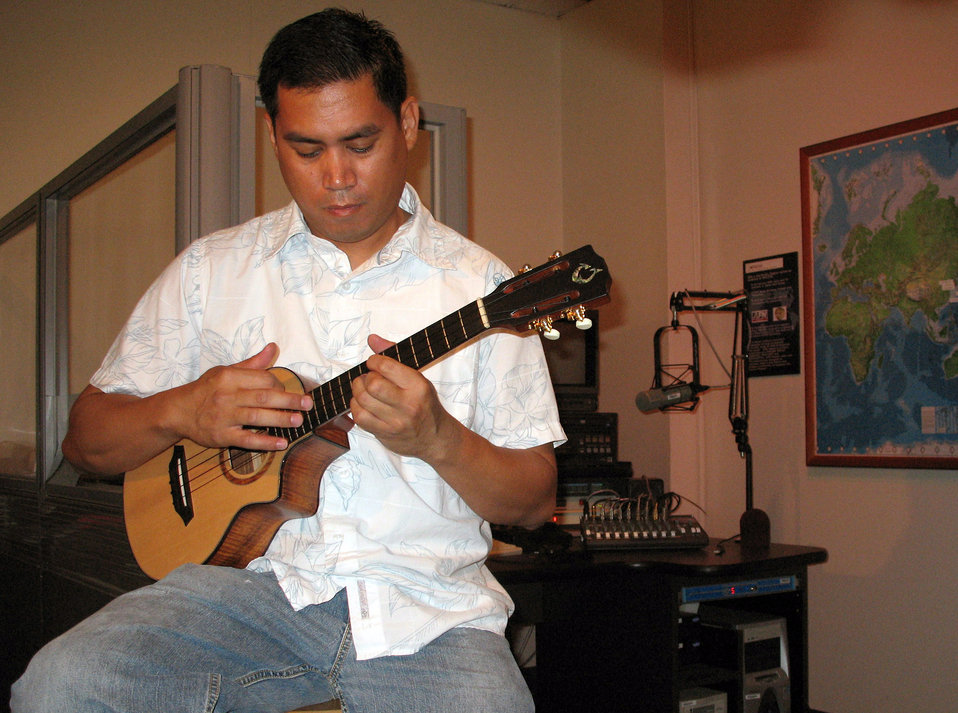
Hickam Airman to play during Air Force Week

Tech. Sgt. Daniel Baduria plays a ukulele Aug. 31 at Hickam Air Force Base, Hawaii. Sergeant Baduria will open the Tops in Blue show at the Waikiki Shell Sept. 12 as part of Air Force Week Honolulu.